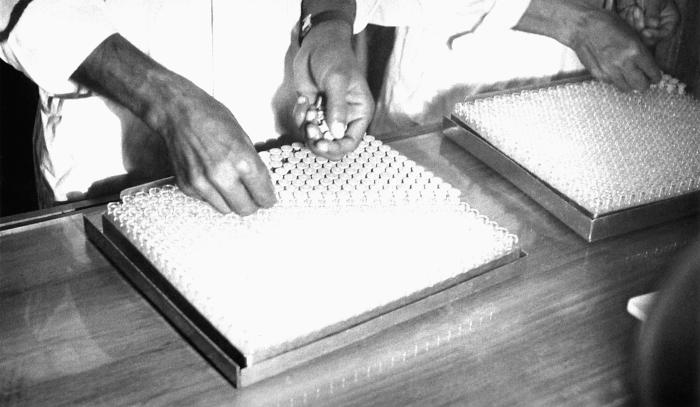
This image depicted two technicians in a Bangladesh laboratory who were in the process of sorting through a collection of glass vials, which were used to contain smallpox vaccine. It was taken by Dr. Stan Foster, EIS, Officer, Class of 1962, while he was part of the worldwide Global Smallpox Eradication Campaign of the late 1960s, early 1970s.